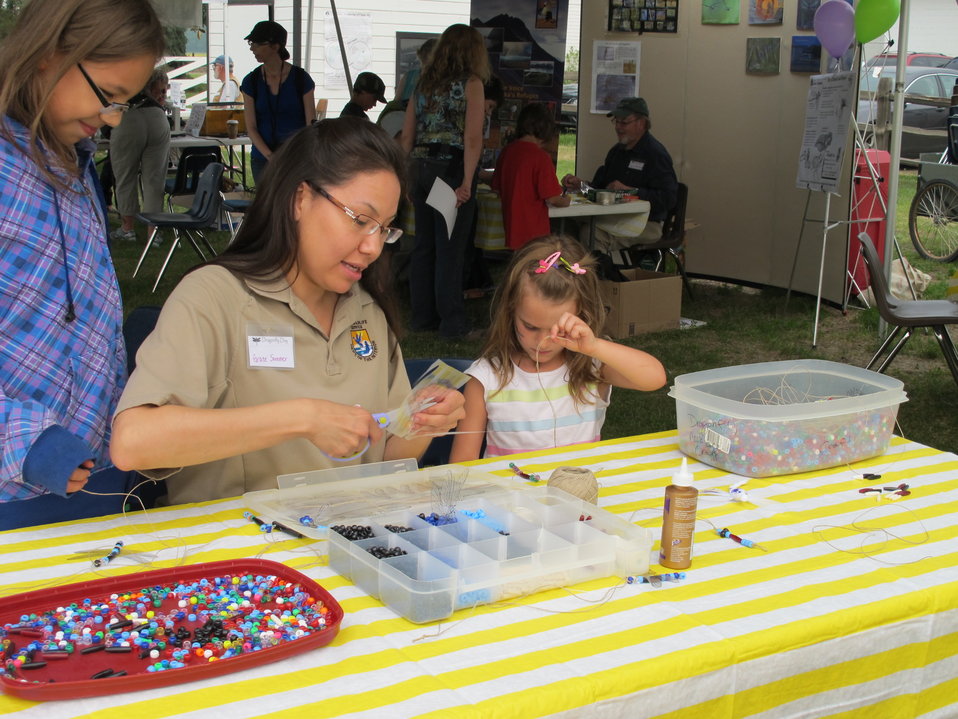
Beaded dragonfly necklaces

(USFWS)